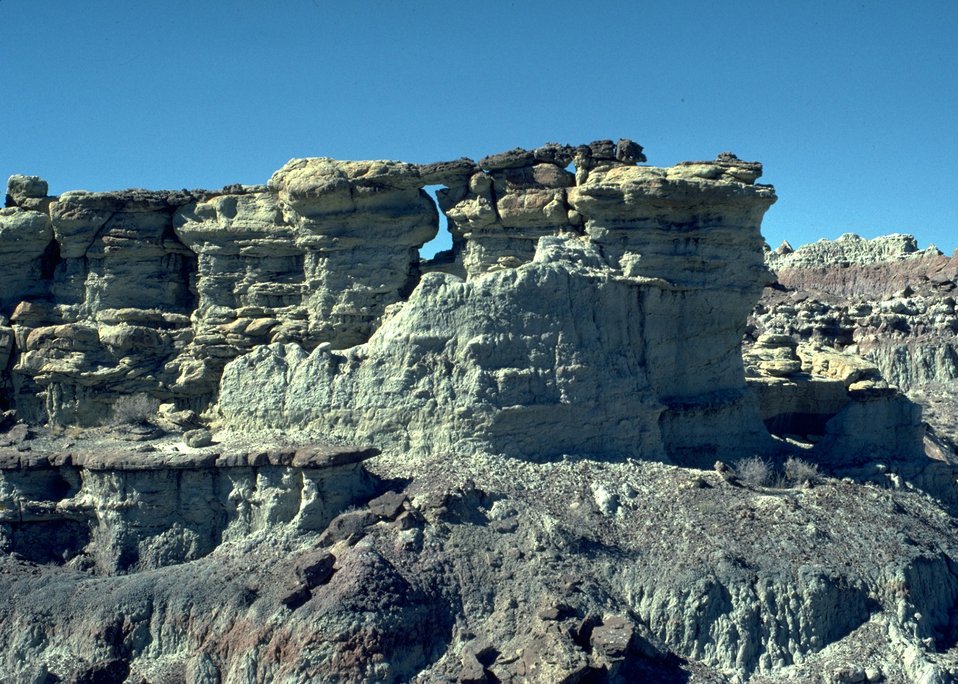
Gooseberry Interpretive Area, Worland Field Office.